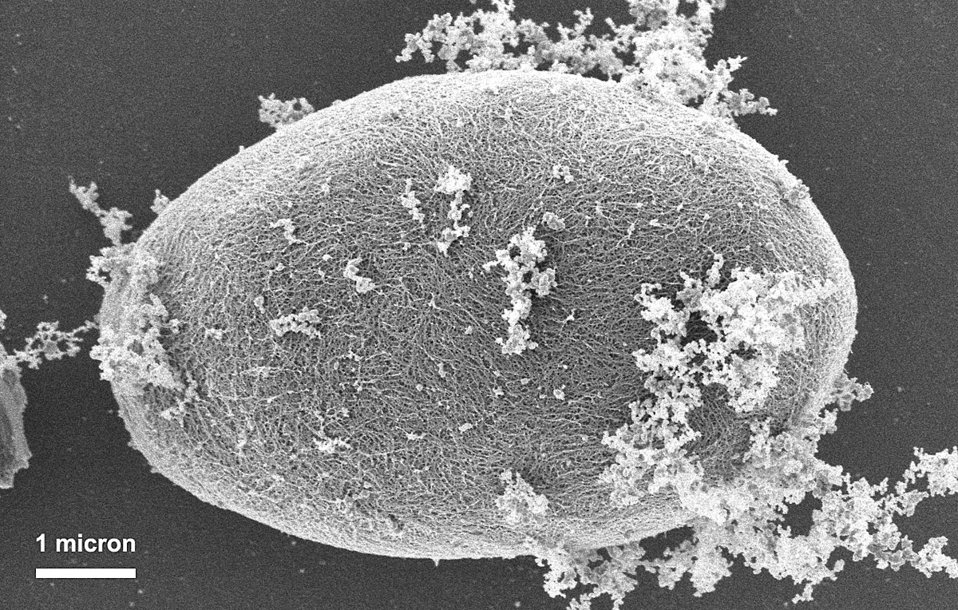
This scanning electron micrograph (SEM) depicted some of the ultrastructural morphologic details of an oblong-shaped Giardia sp. protozoan cyst, revealing the filamentous nature of the cyst wall. Each filament is approximately 7 to 20 nanometers (nm) thick.